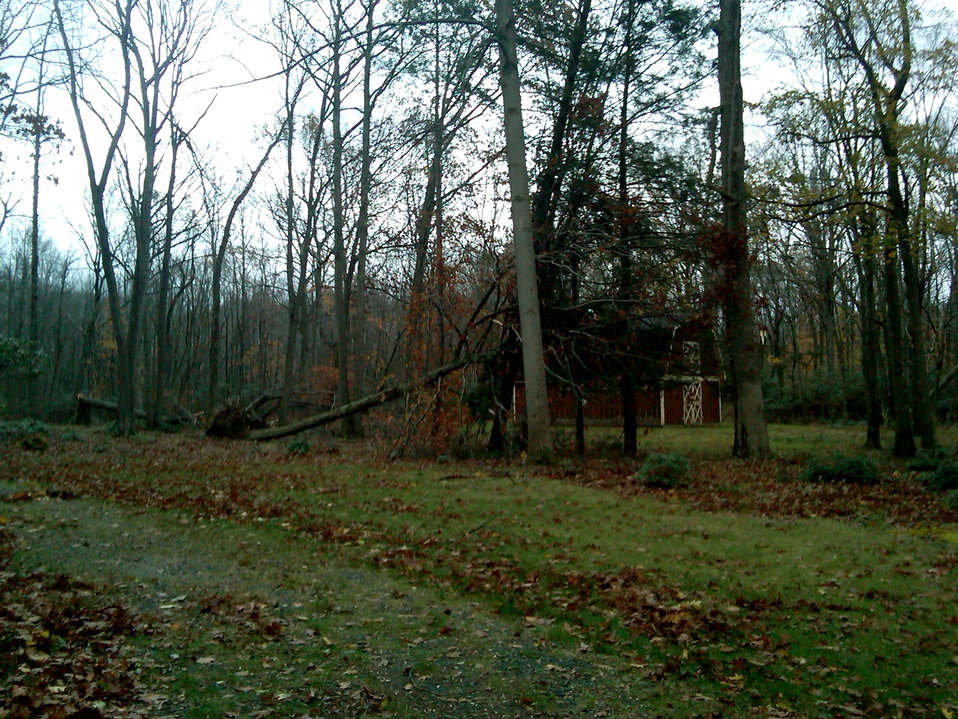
Hurricane Sandy caused damage at Great Swamp National Wildlife Refuge (NJ)

Downed tree at the refuge.